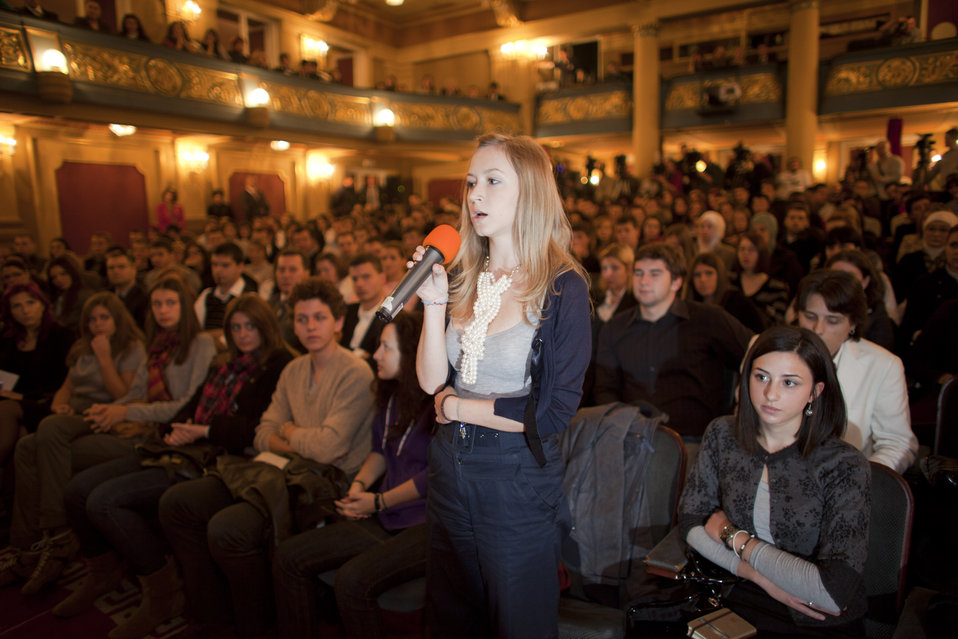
A Student Asks Secretary Clinton a Question

A student asks U.S. Secretary of State Hillary Rodham Clinton a question at the town hall meeting with university students and civil society representatives, at the National Theater, in Sarajevo, Bosnia and Herzegovina, on October 12, 2010.